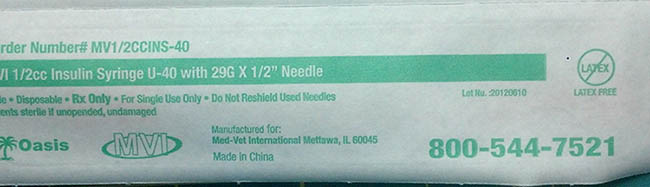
RECALLED – Insulin syringes

February 20, 2014 – Product Recall – Med-Vet International Issues Nationwide Recall of Veterinary 1/2cc U-40 Insulin Syringes Due to Mismarked Syringe Barrels.